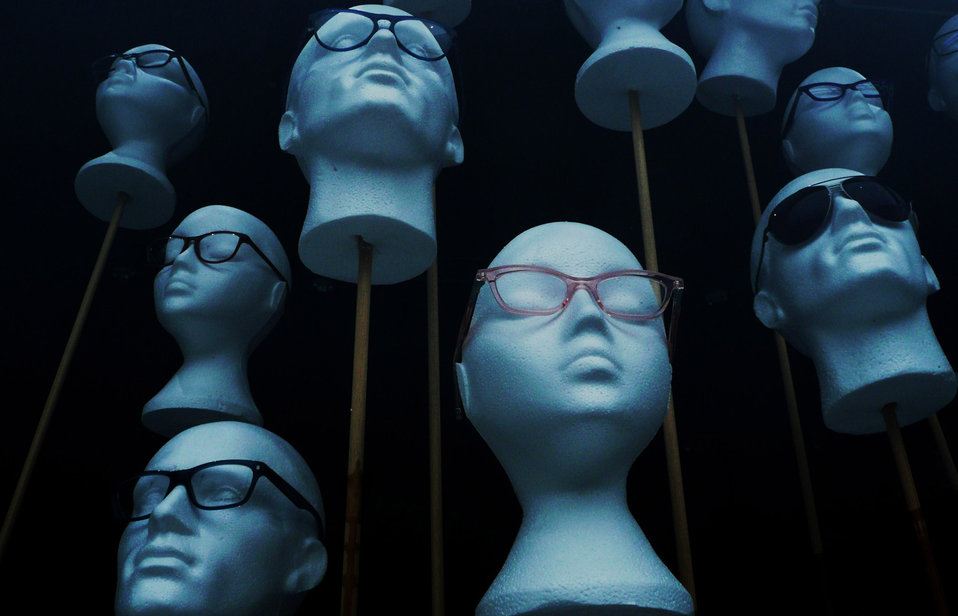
Styrofoam head and glasses.